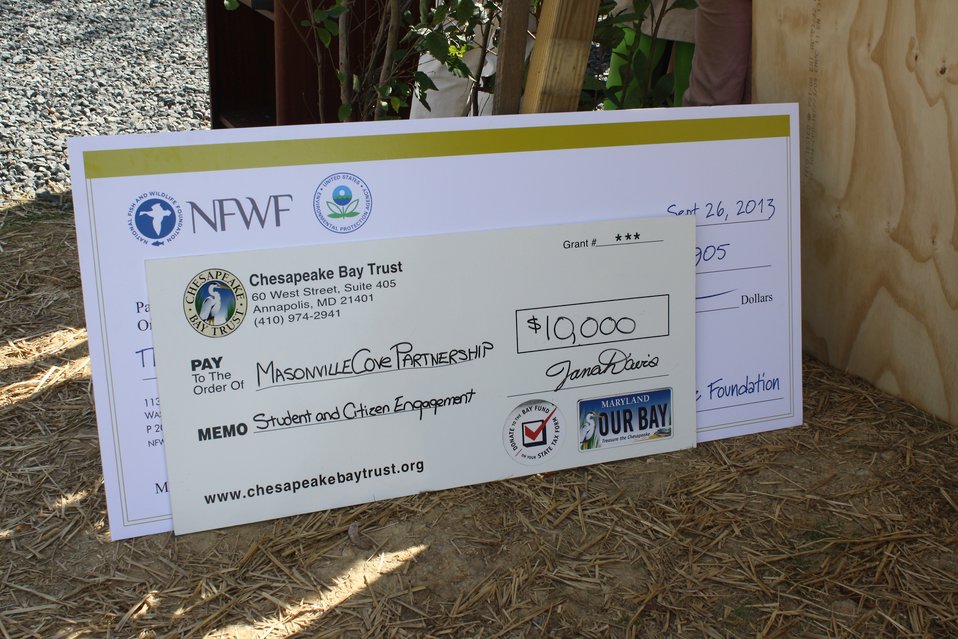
Funding for Masonville Cove

The National Fish and Wildlife Foundation donated $35,000 and the Chesapeake Bay Trust donated $10,000 to the Masonville Cove partnership. The funds will provide environmental education to Baltimore City students and help further restoration efforts around the cove.